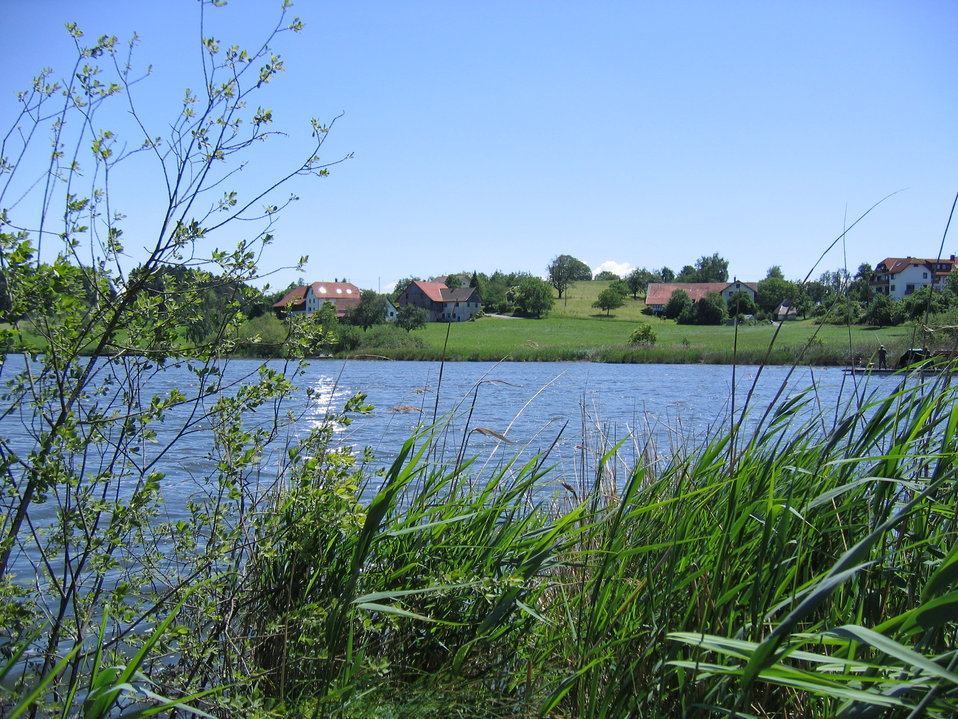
Deutsch: Muttelsee bei Tettnang / Bodenseekreis / Baden-Württemberg / Deutschland